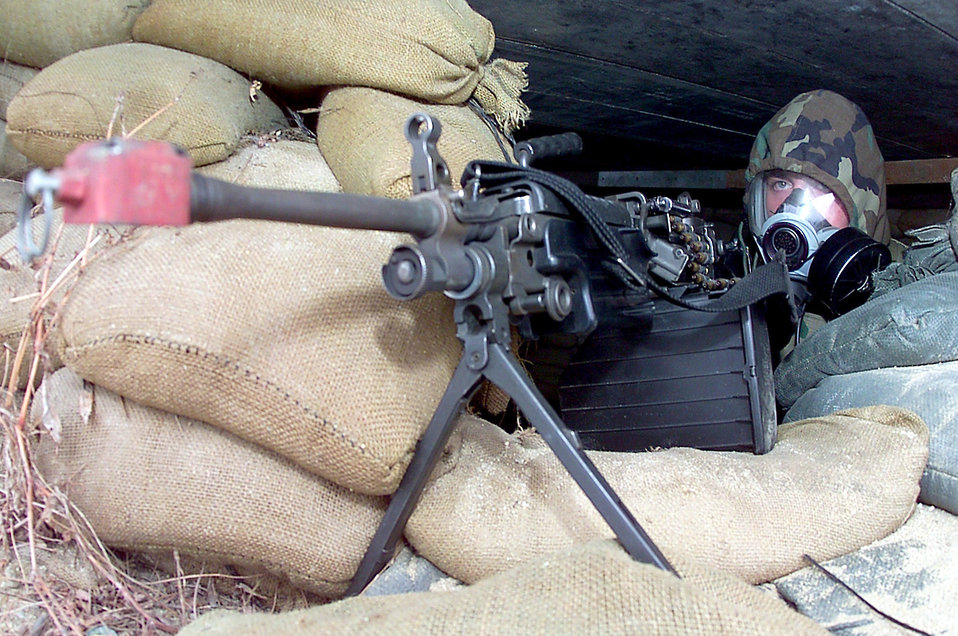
Ready to fight

OSAN AIR BASE, South Korea -- Airman Brian Jabolski mans his weapon for simulated battle during exercise Beverly Bulldog 01-04 here March 24. Airman Jabolski is a member of the 51st Security Forces Squadron.